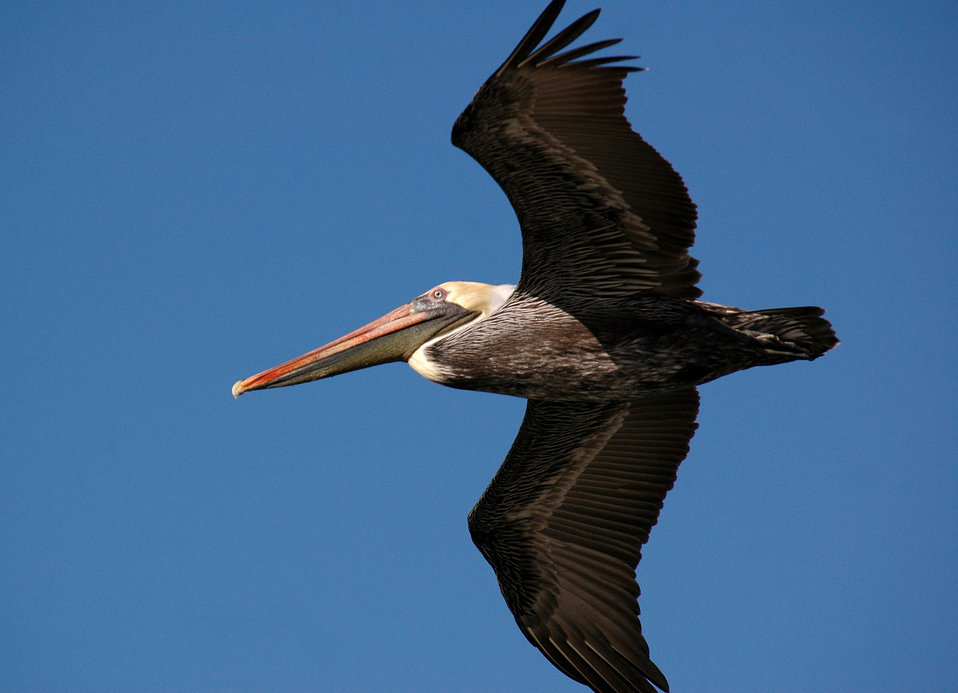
Pelican flying

A pelican flying over the ocean in florida..